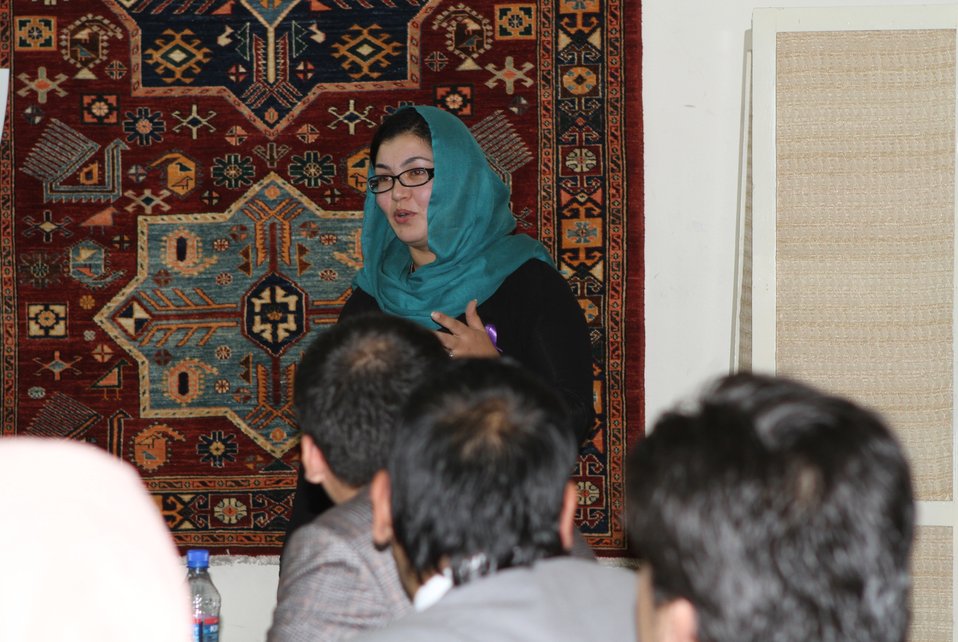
Presentation of the ACTA Civil Society analysis of the FY 1392 Afghan national budget